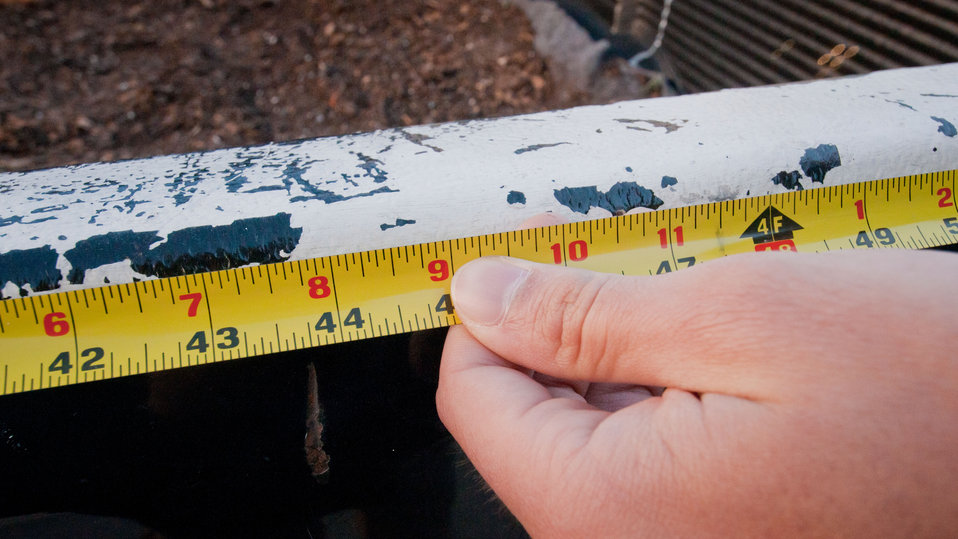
D.C. Central Kitchen’s “The Campus Kitchens Project’s” Matt Schnarr measures the width of the Truck Farm’s truck bed during a chilly morning start in Washington, D.C., on Friday April 6, 2012. The measurement will be used to setup a string grid to help the Truck Farm workers identify the 25 specific areas to plant seeds and seedlings. This Truck Farm is a D.C. Central Kitchen and U.S. Department of Agriculture People’s Garden Initiative partnership that, like other Truck Farms around the country, will travel around the city to schools and community sites, teaching children about healthy eating and where their food comes from through the garden display in its truck-bed. Along with other local donors, the People’s Garden Initiative supports this “edible exhibit” by providing seedlings and educational materials. Mr. Schnarr is on staff with D.C. Central Kitchen for one year as part of his year of AmeriCorps VISTA service.